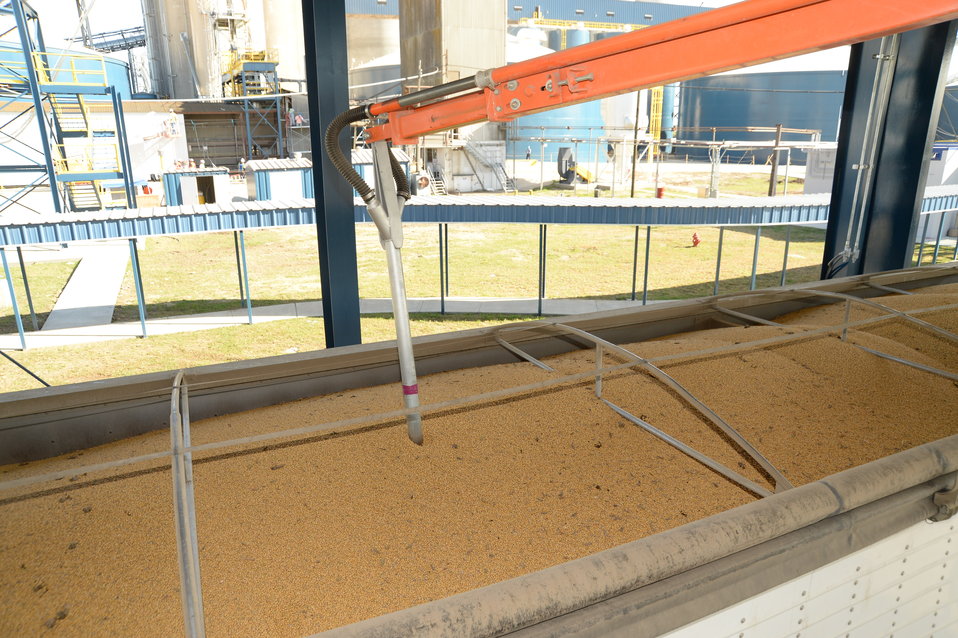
A sample of grain is removed from a barge for testing at the U.S. Department of Agriculture’s (USDA) Grain Inspection, Packers and Stockyards Administration (GIPSA) Federal Grain Inspection Service (FGIS) laboratory in New Orleans, LA on Tuesday, Nov. 19, 2013.